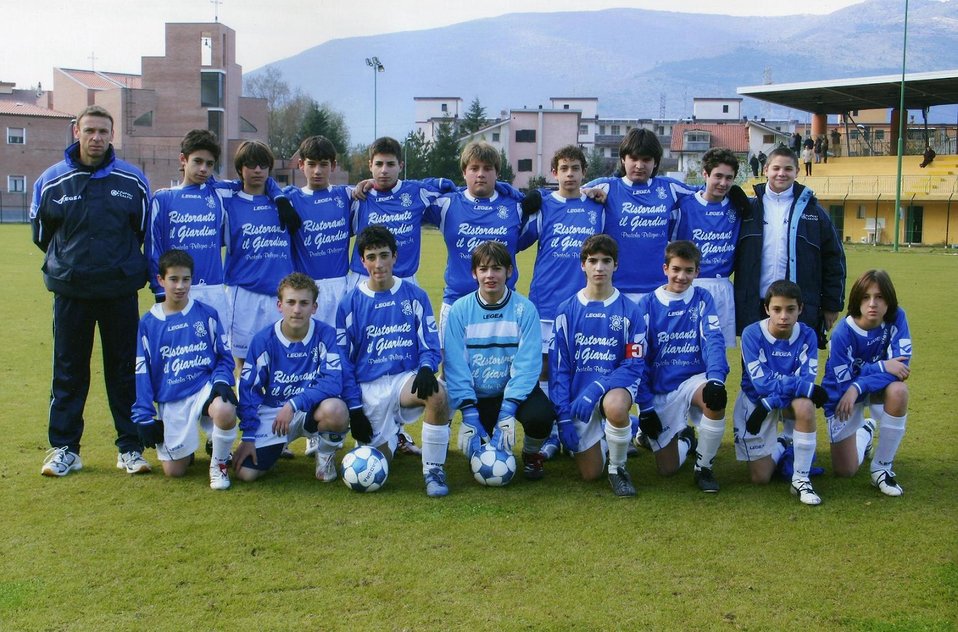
Italiano: Squadra Giovanissimo del Popoli calcio